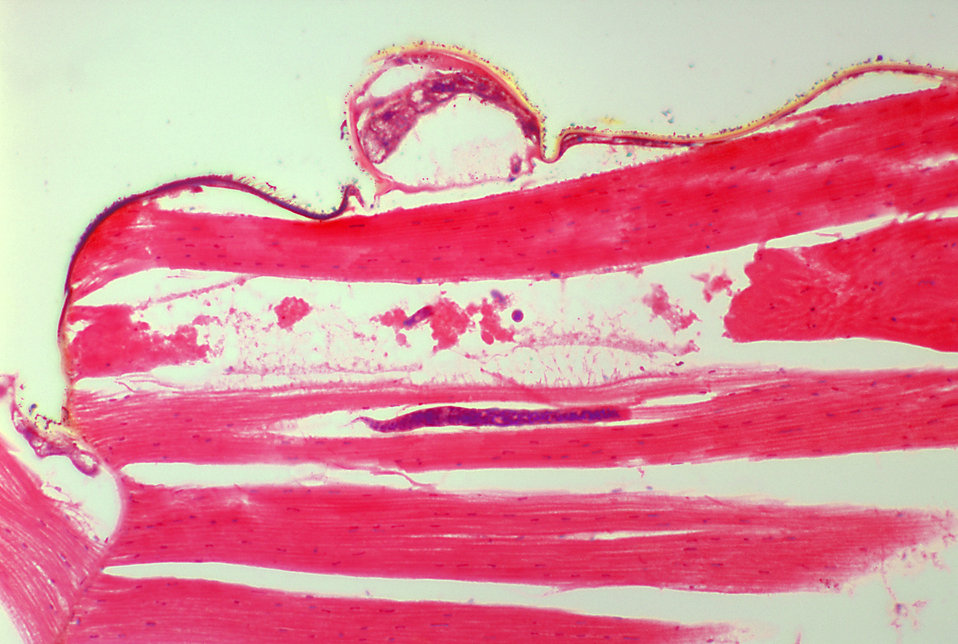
A photomicrograph revealing the histology of Onchocerca volvulus developing in a Black Fly, Simulium ochraceum.